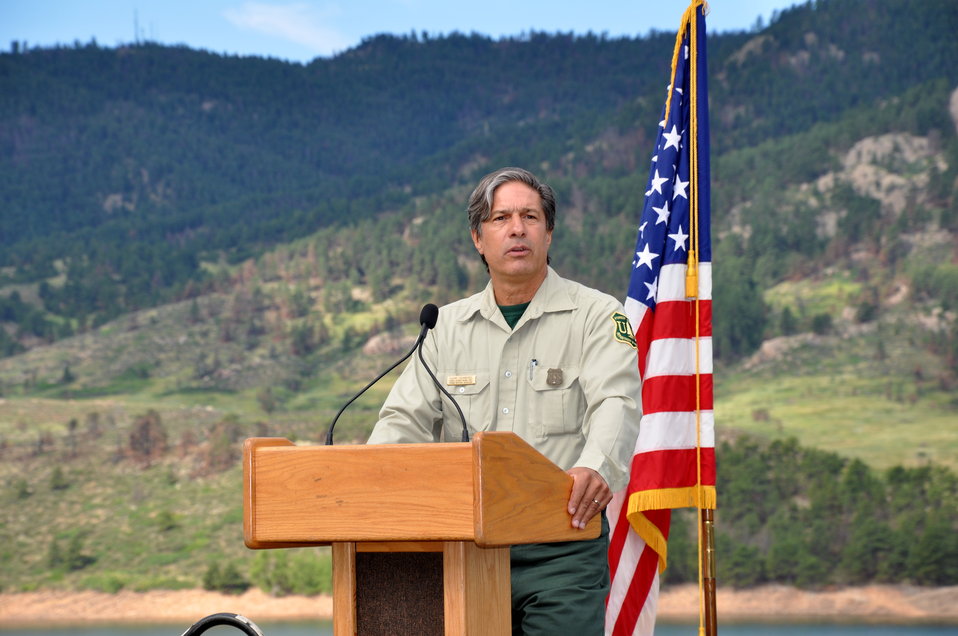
U.S. Forest Service Arapaho and Roosevelt National Forests and Pawnee National Grassland Supervisor Glenn Casamassa speaks at the Memorandum of Understanding (MOU) signing held at the Horsetooth Reservoir in Fort Collins, CO on Jul. 19, 2013. Agriculture Secretary Tom Vilsack and Interior Secretary Sally Jewell signed this MOU that will facilitate activities such as wildfire risk reduction through forest thinning, prescribed fire and other forest health treatments; minimizing post-wildfire erosion and sedimentation; and restoring areas that are currently recovering from past wildfires through tree planting and other habitat improvements.